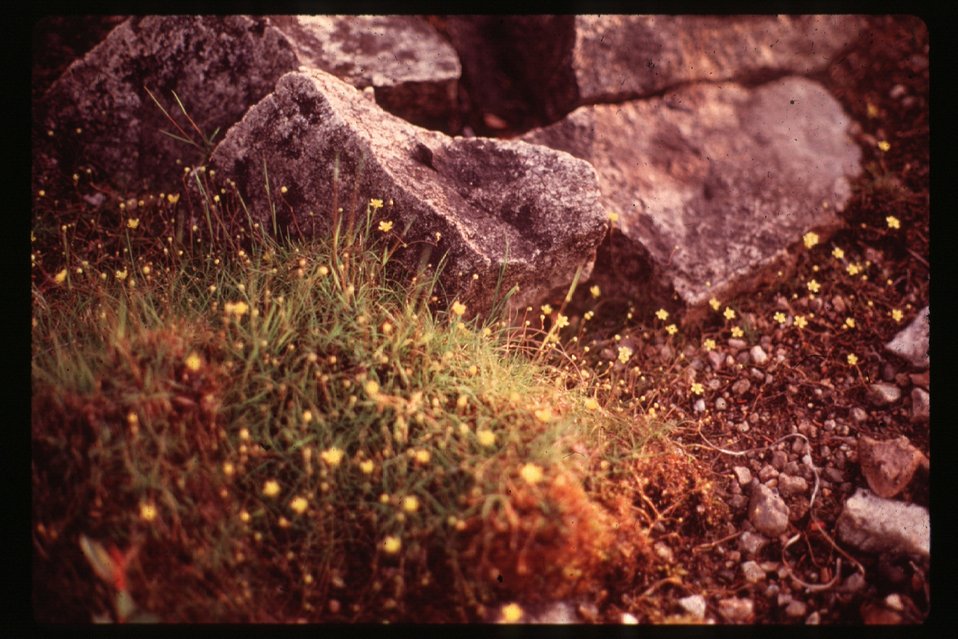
Buttercups Ranunculus Wildflower